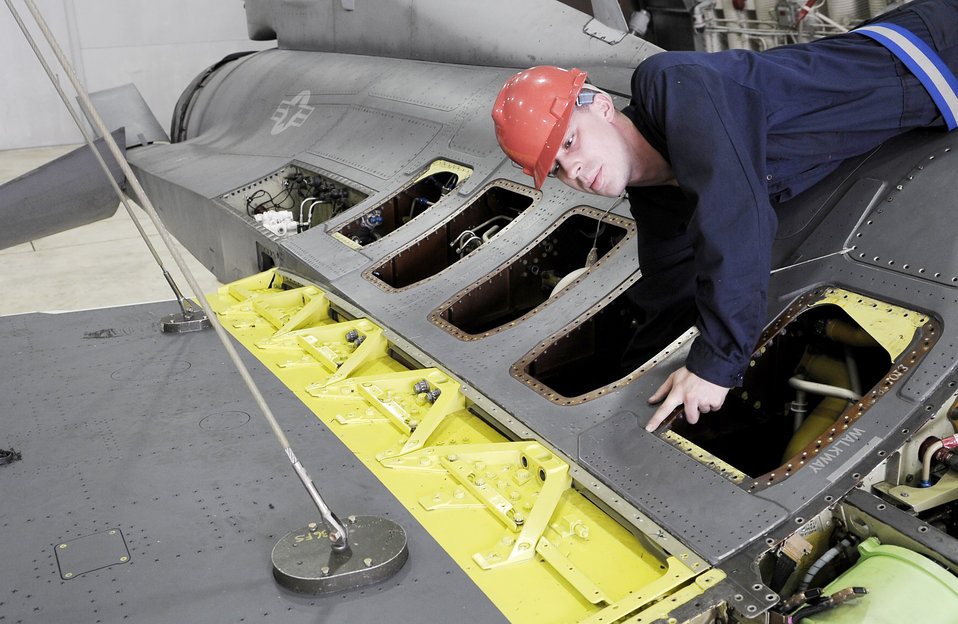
Repairing a wing

Senior Airman Malcolm Asher loosens one of 16 bolts securing the wing of an F-16 Fighting Falcon Sept. 25, 2009, at Osan Air Base, South Korea. The wing is being replaced due to corrosion and cracks found during a routine inspection. Airman Asher is an aircraft fuel system technician with the 51st Maintenance Squadron.